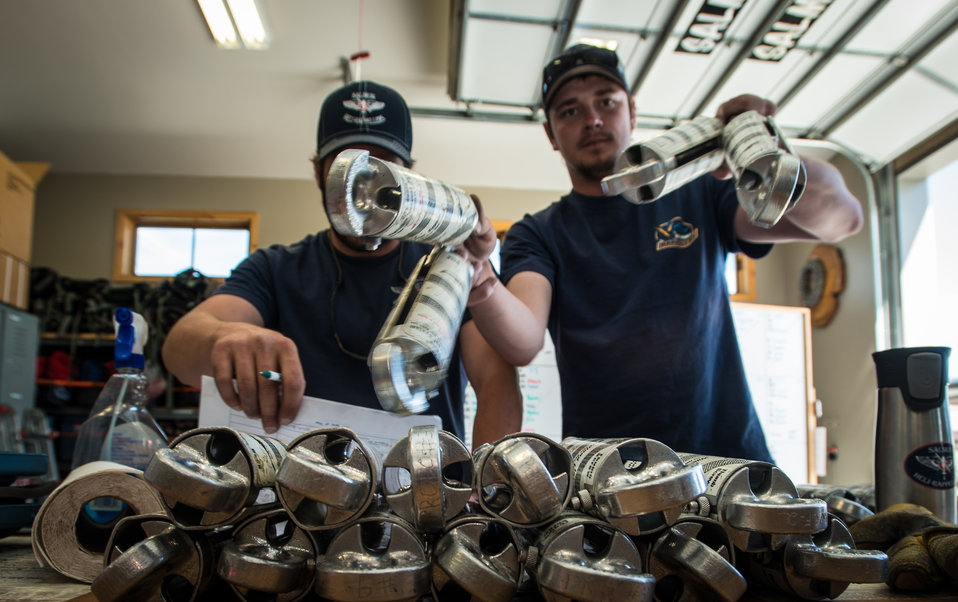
Wallowa-Whitman National Forest, Sled Springs Rappel Crew and Rappel Academy Equipment Lead Tysen Haney grabs Sky Genie Decent Control System devices that have been cleaned, inspected and their use logged in record books on Wednesday, May 14, 2014, before being stored for the next class at the U.S. Department of Agriculture (USDA) U.S. Forest Service (USFS) National Helicopter Rappel Program’s Rappel Academy at Salmon Air Base in Salmon, ID. From May 12, 2014, 72 veteran rappellers from all over the nation, 30 support staff, and three helicopters with flight crews attend the training at Salmon Air Base. Participants will rappel into the Perreau Creek area. The annual training is delivered in accordance with the National Rappel Operations Guide; strengthen leadership, teamwork, and communications within the rappel community, and produces quality aerial delivered firefighters for use in fire and aviation operations. The USDA Forest Service National Helicopter Rappel Program’s primary mission is initial attack. Rappel crews may be utilized for large fire support, all hazard incident operations, and resource management objectives.